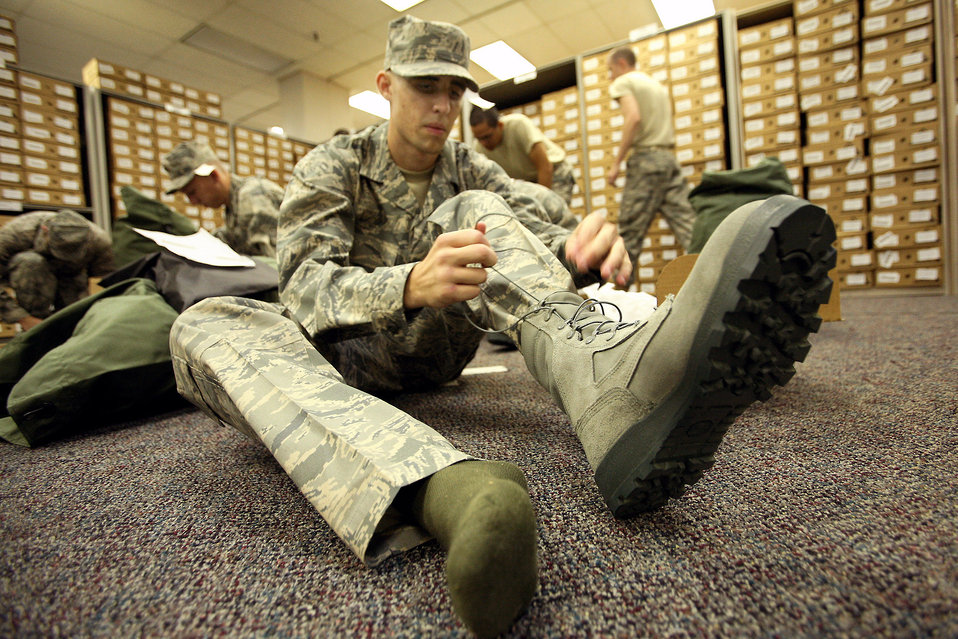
Getting the 'boot'

Trainee Kyle Bean laces up the new air battle uniform, or ABU, boots during the first clothing issue Sept. 10 at Lackland Air Force Base, Texas. He is in the first flight to receive the ABU boot in basic military training.